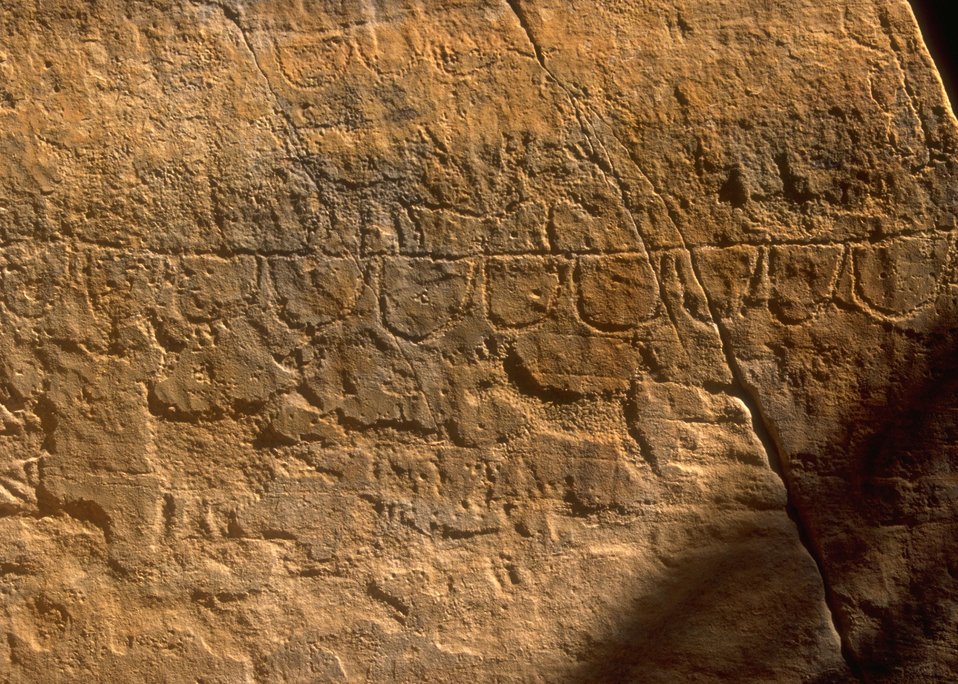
Petroglyph panel in Whoopup Canyon, Newcastle Field Office.